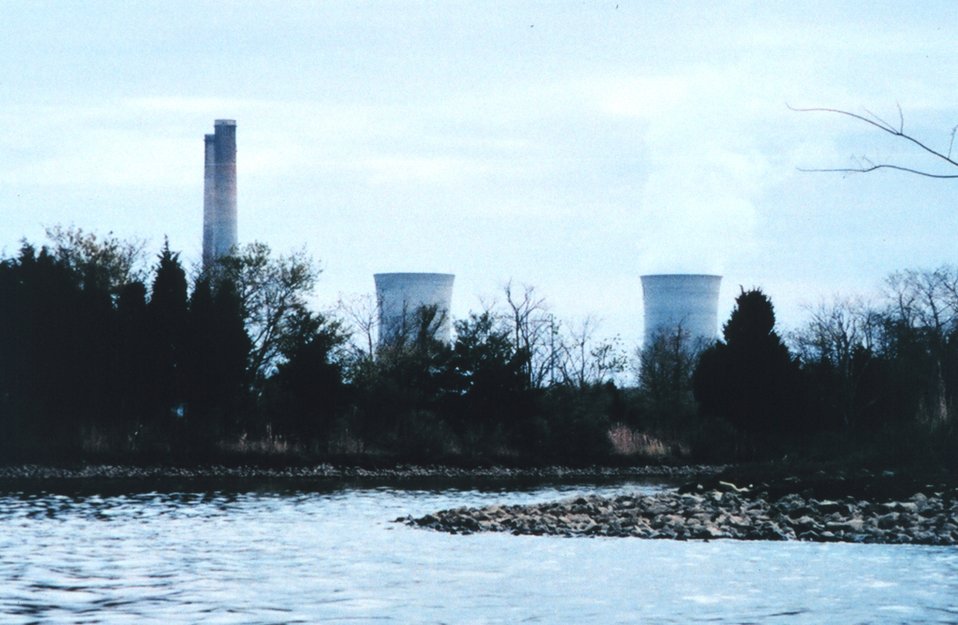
Pepco's Chalk Point Generating Plant on the Patuxent River. A pipeline carrying oil to this plant burst and spilled 100,000 gallons of oil into Swanson Creek on April 7, 2000.